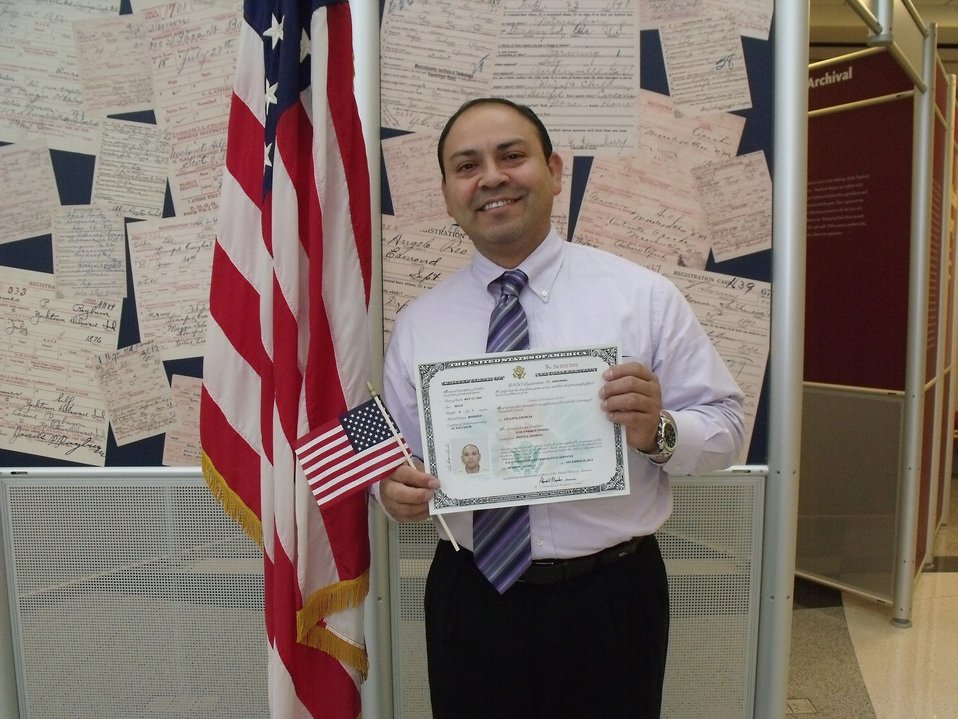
New Citizens